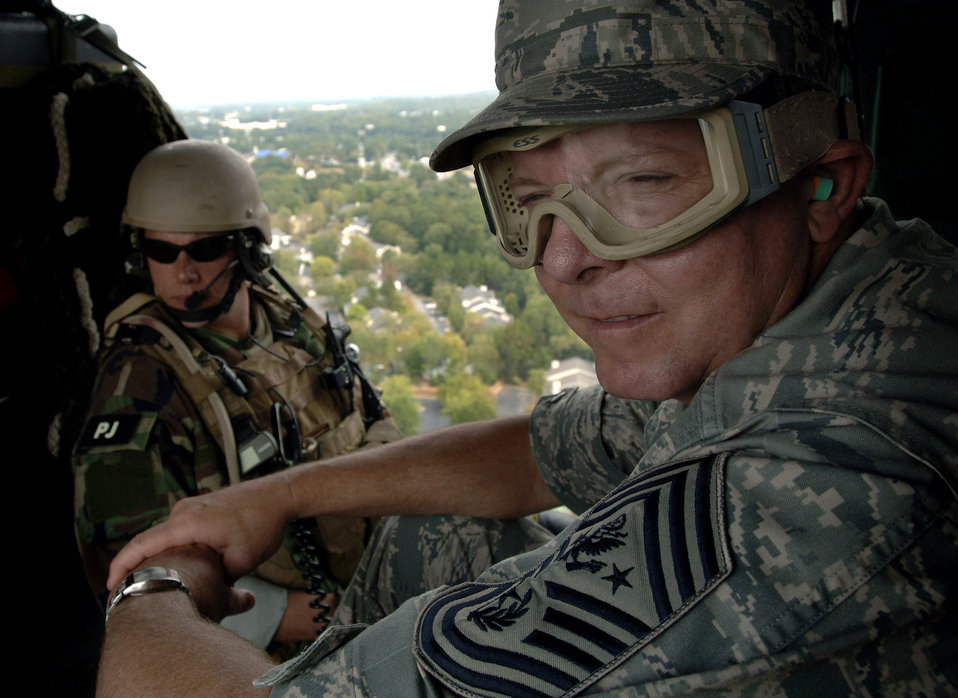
Airmen visit schools as part of Air Force Week Atlanta

Chief Master Sergeant of the Air Force Rodney J. McKinley gets a birds-eye view of Atlanta Oct. 9 aboard a HH-60G Pave Hawk helicopter courtesy of the 920th Rescue Wing from Patrick Air Force Base, Fla., following an Air Force Week Atlanta event.